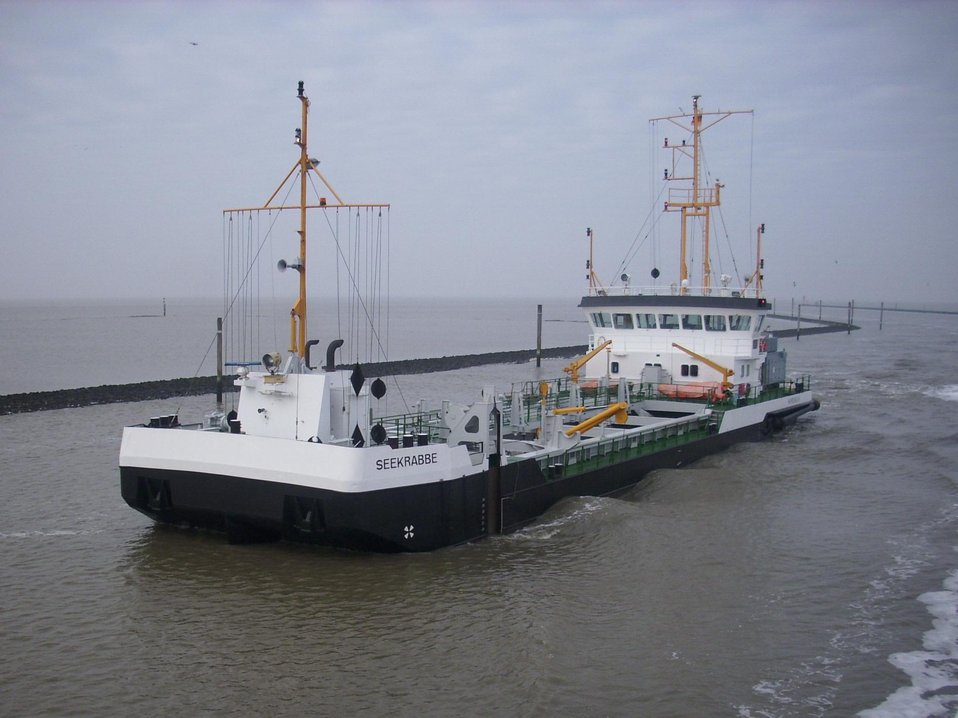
Deutsch: Baggerschiff Seekrabbe im Einsatz in der Einfahrt vor Norddeich